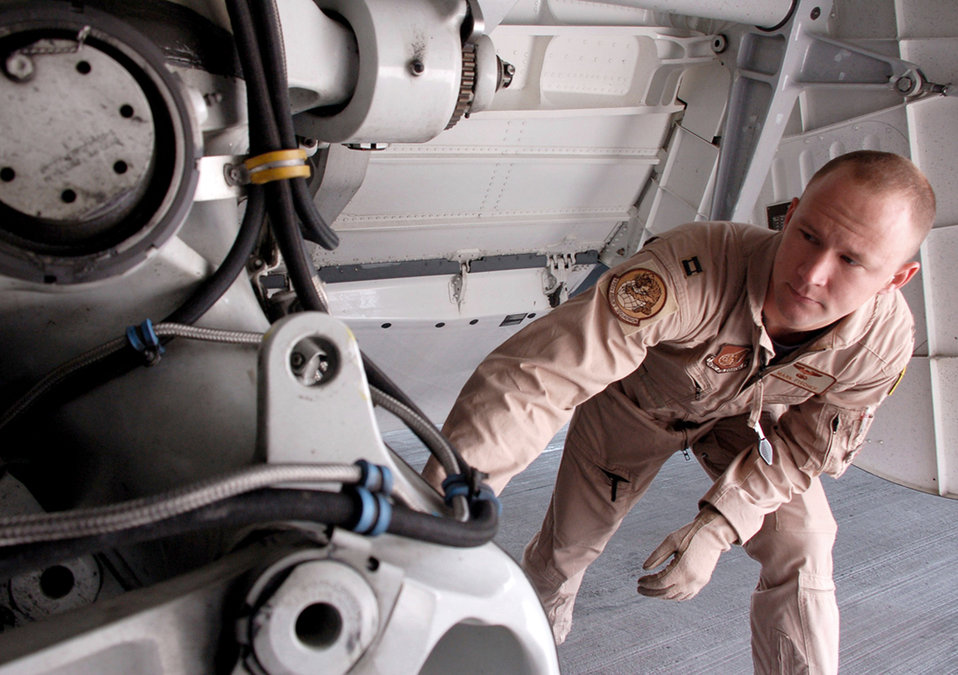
C-17 stage crew at Manas ramp up support for OEF

Capt. Mark Fischer conducts a final inspection April 18 on a C-17 Globemaster III he will fly to Afghanistan from Manas Air Base, Kyrgyzstan. During the past five weeks, aircrews have been flying three flights nearly every day in order to deliver needed supplies for the buildup of various bases supporting Operation Enduring Freedom.